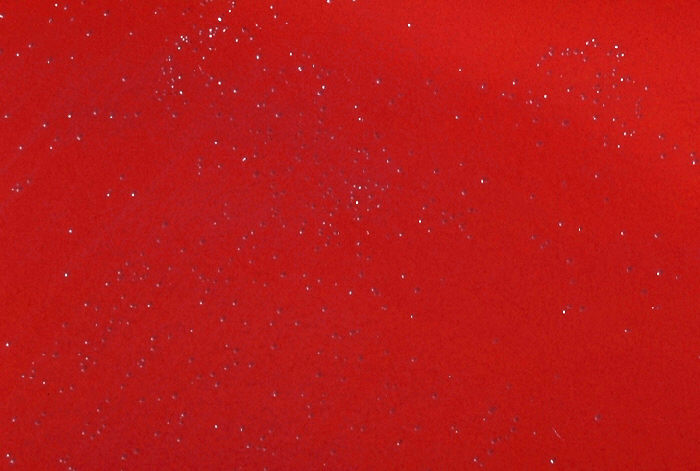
Blood agar plate culture of Corynebacterium diphtheriae intermedius.